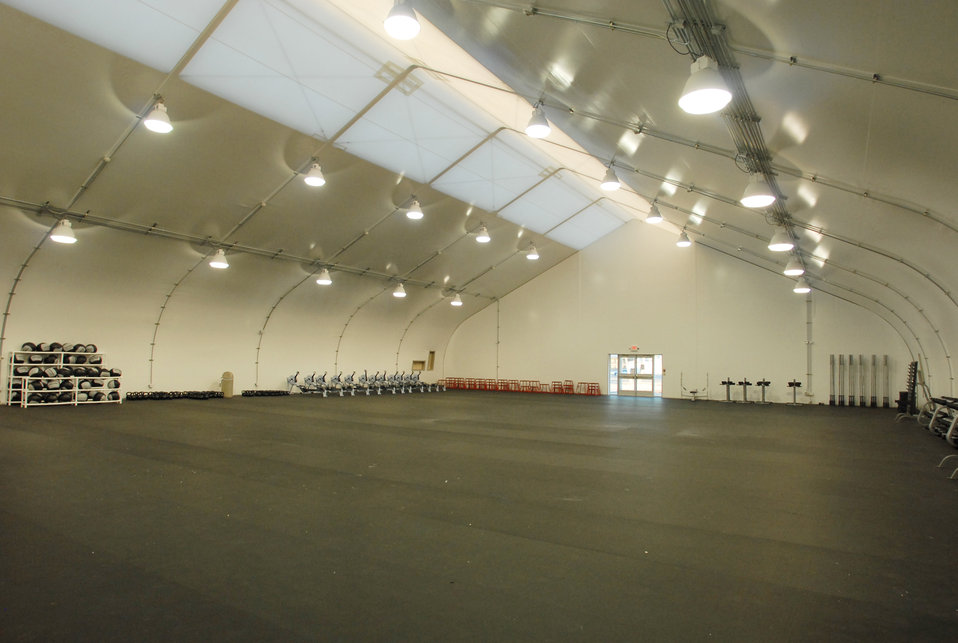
Luke opens combat PT center

Officials from the 56th Fighter Wing commissioned the newest physical training venue with the opening of the combat physical training center Jan. 21, at Luke Air Force Base, Ariz. The 8,000 square foot facility is the fourth PT location the wing has built or renovated in the past year.